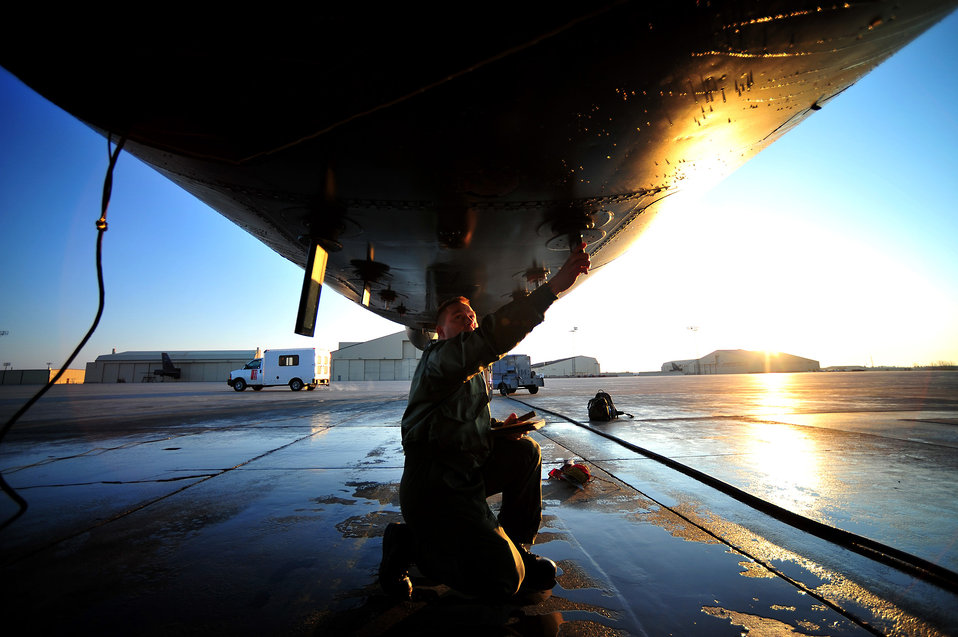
Checking it out

An aircrew member assigned to the 23rd Bomb Squadron performs preflight checks on a B-52 Stratofortress April 20, 2011, at Minot Air Force Base N.D., prior to a mission.